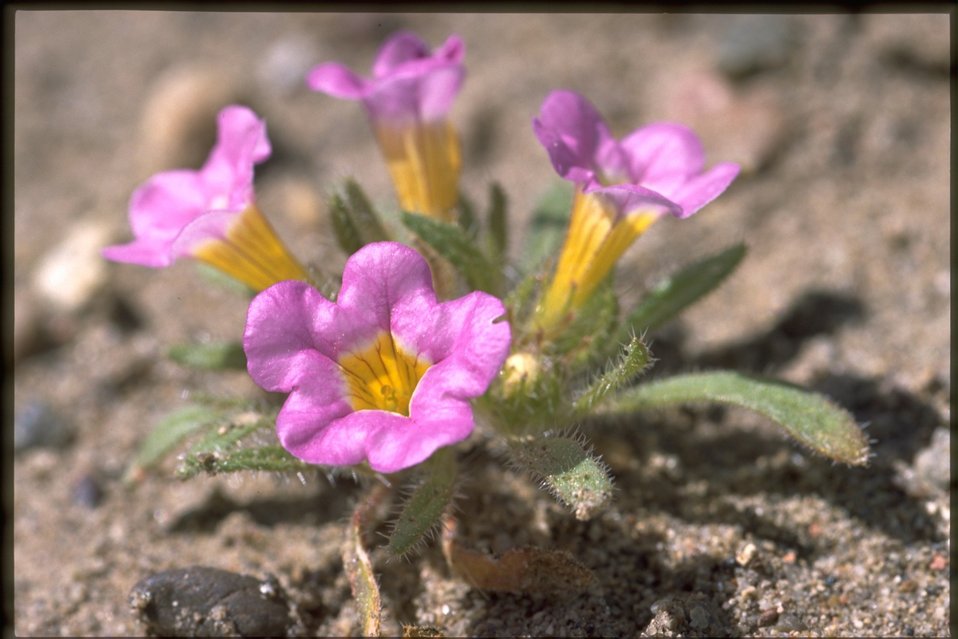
Medium shot of unidentified wildflower.